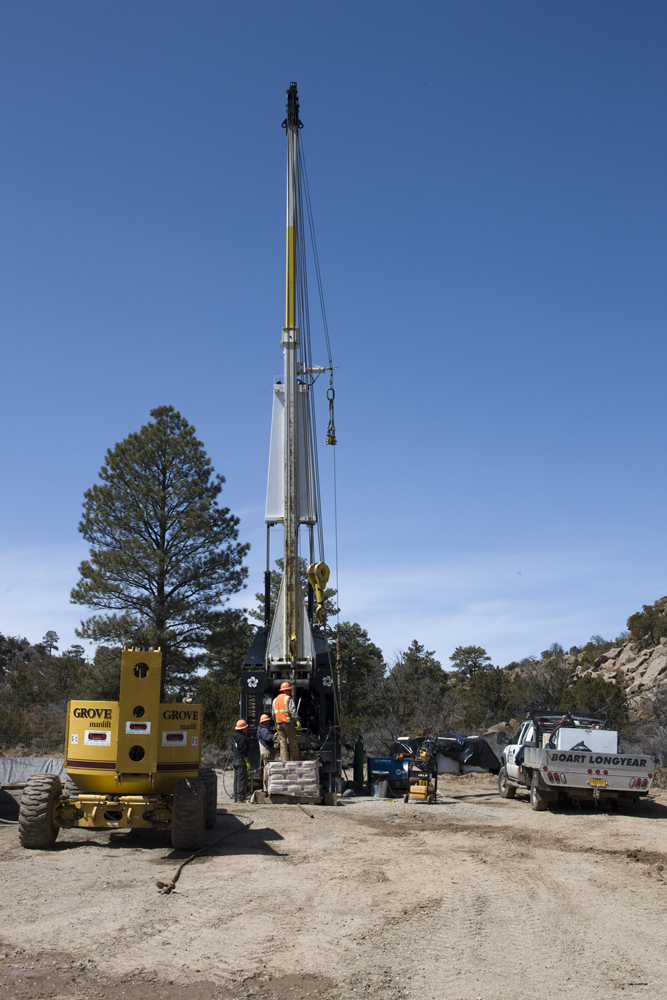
Wells Savings Finance Additional Well, Sampling Study

Part of the Recovery Act projects at Los Alamos National Laboratory was the installation of 16 groundwater monitoring wells. With the project nearing completion slightly more than a year later (2010), almost 10 percent of the overall budget was saved through efficient purchasing and construction and will be used for additional projects.